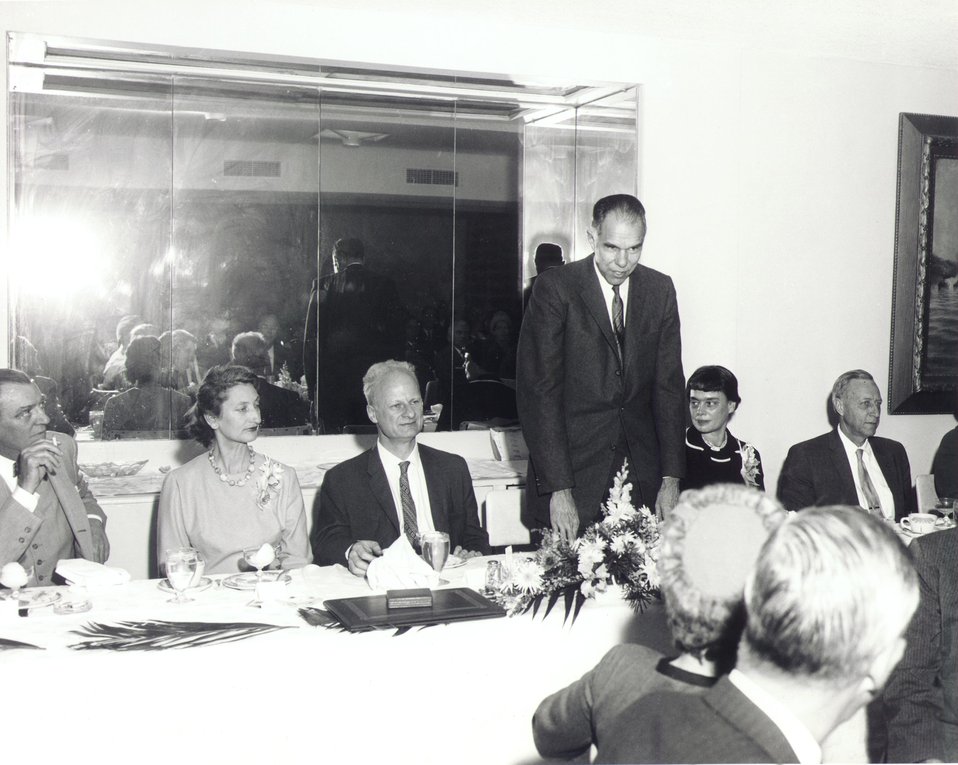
Fermi Award Ceremony & luncheon for Dr. Bethe in Washington on Dec. 1, 1961.